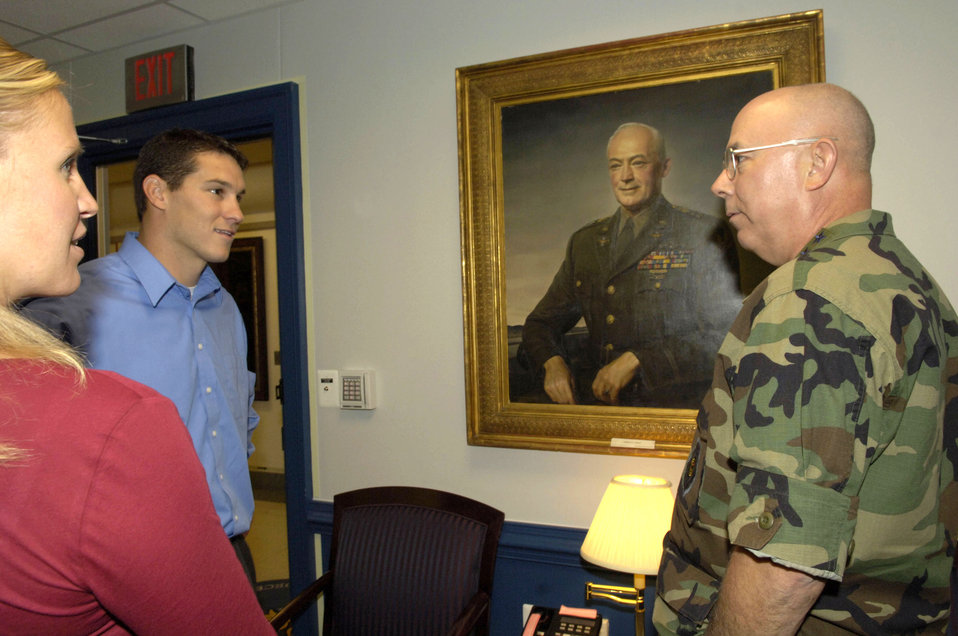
'Treasure Hunters' meet Air Force leaders

Air Force Chief of Staff Gen. T. Michael Moseley talks with Matt and Brooke Rillos of Team Air Force from the